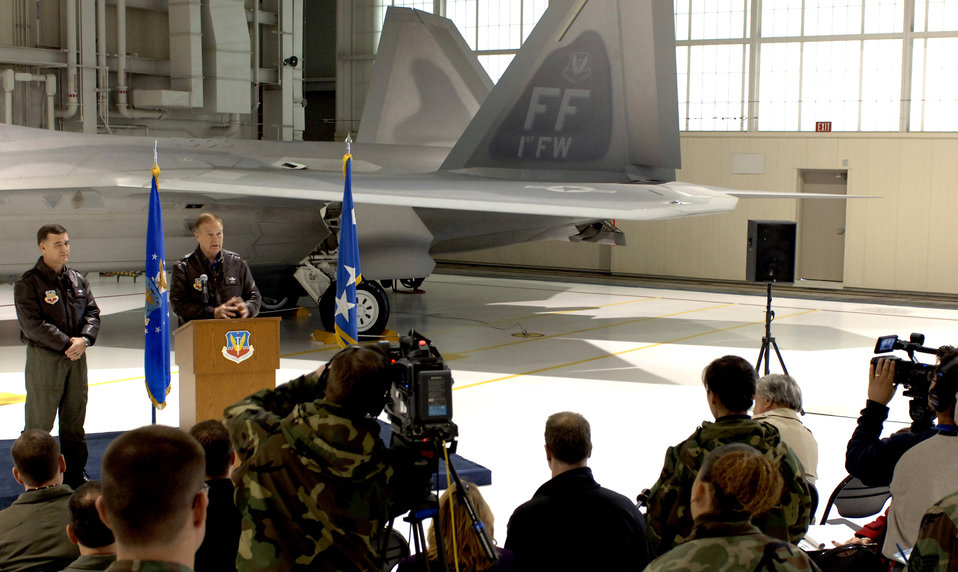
Combat ready Raptor

LANGLEY AIR FORCE BASE, Va. (AFPN) -- Gen. Ronald Keys and Brig. Gen. Burton Fields answer questions during a press conference to announce the F-22A Raptor's initial operating capability today. General Keys is the commander of Air Combat Command. General Fields is the commander of the 1st Fighter Wing.